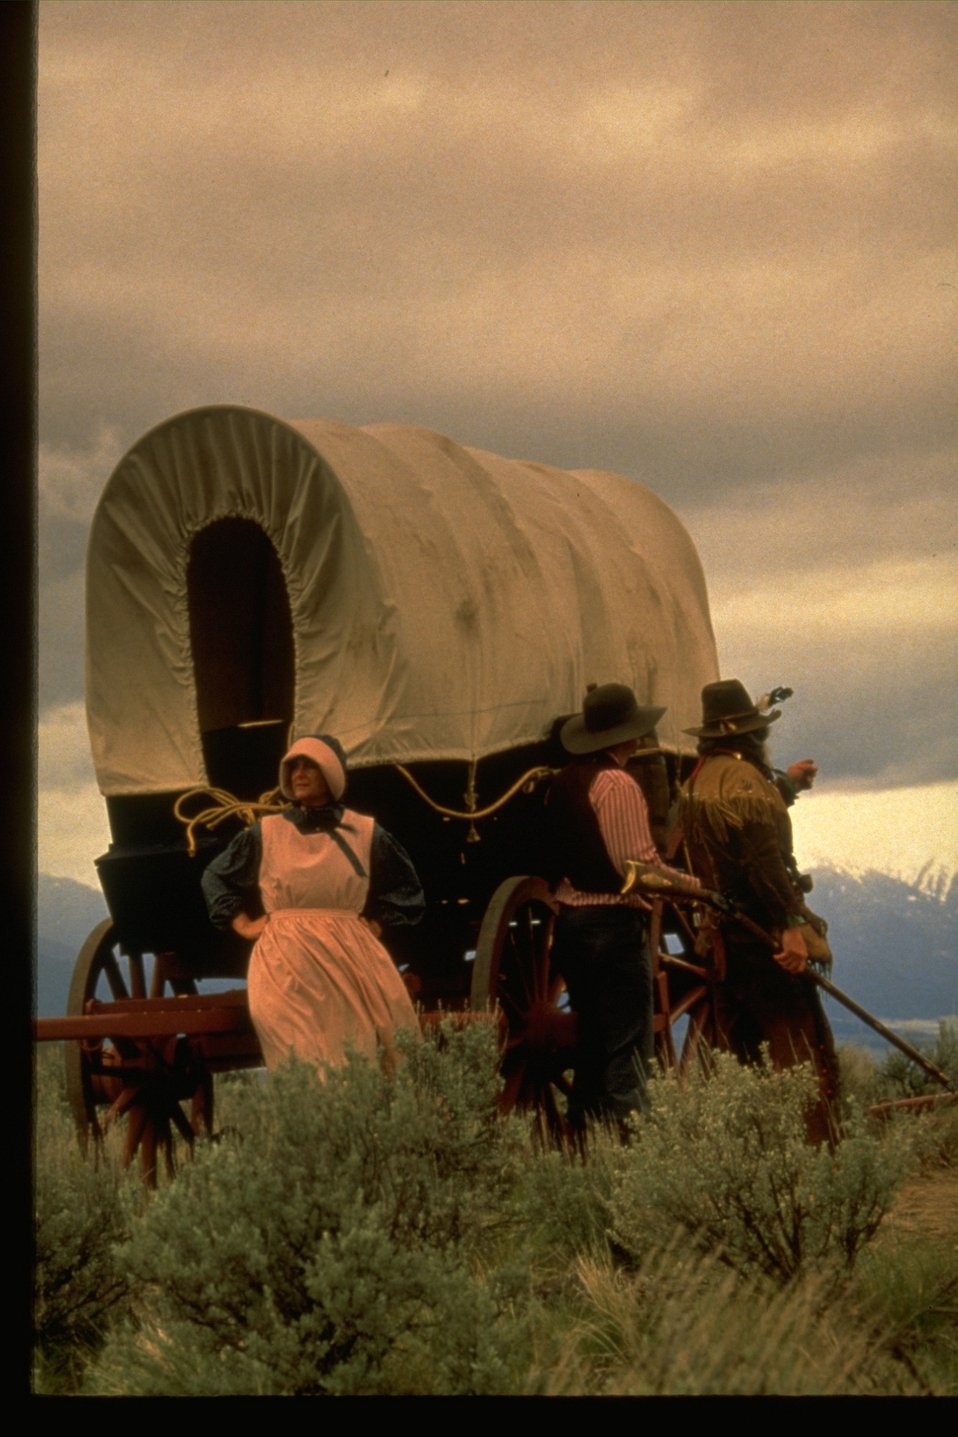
Re-enactment with pioneers and wagon.